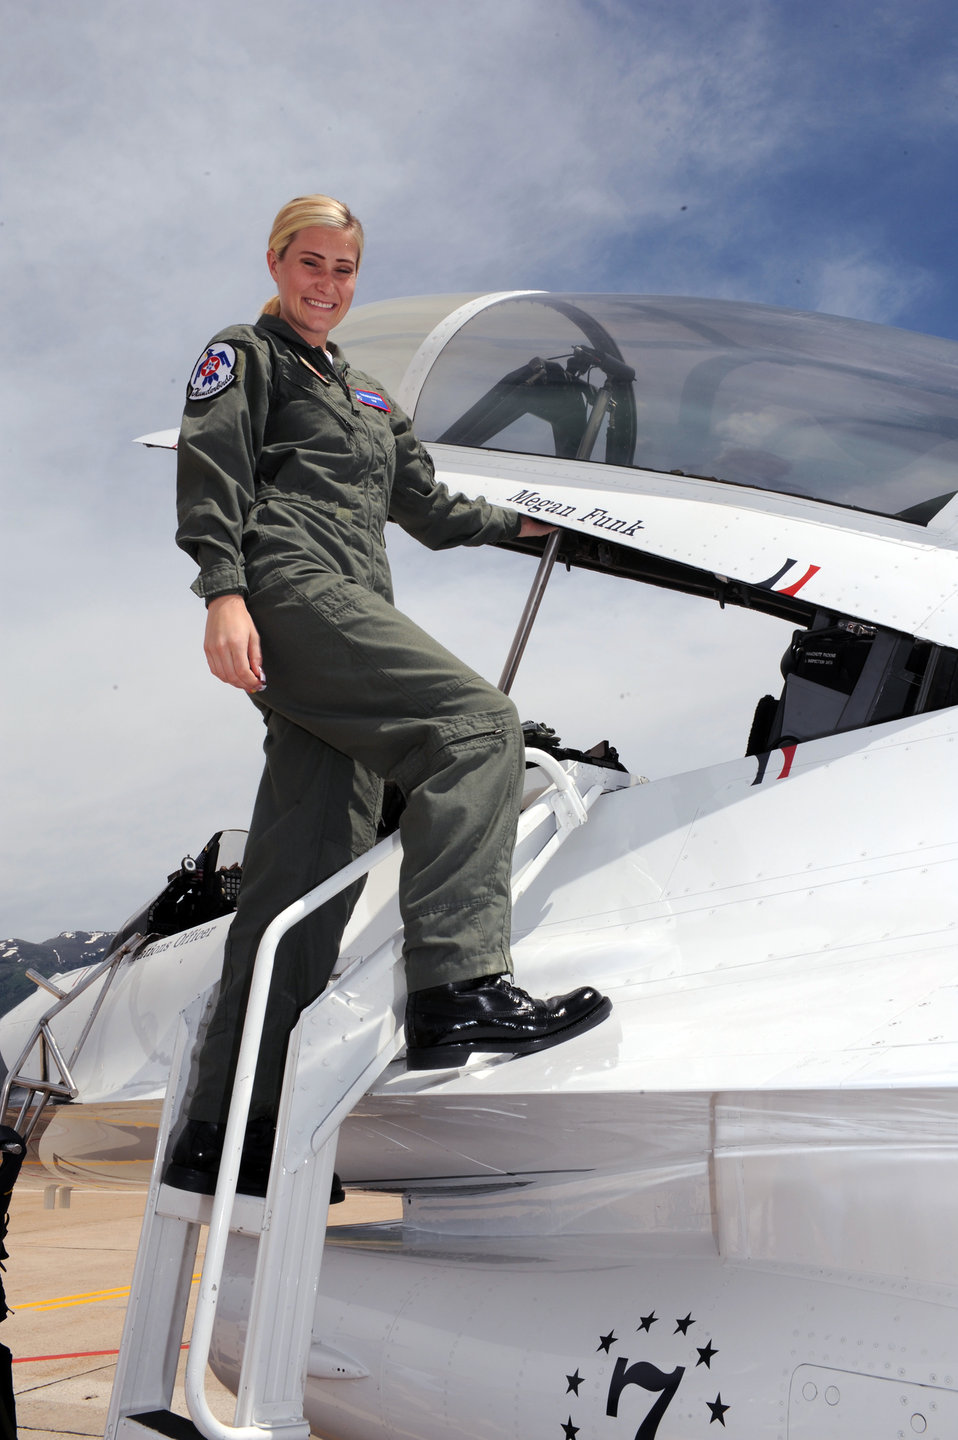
Hometown Hero

Megan Funk, a second grade teacher at Majestic Elementary School in Ogden, Utah, prepares to take her Hometown Hero flight in a Thunderbird F-16 Fighting Falcon June 4 at Hill Air Force Base, Utah.